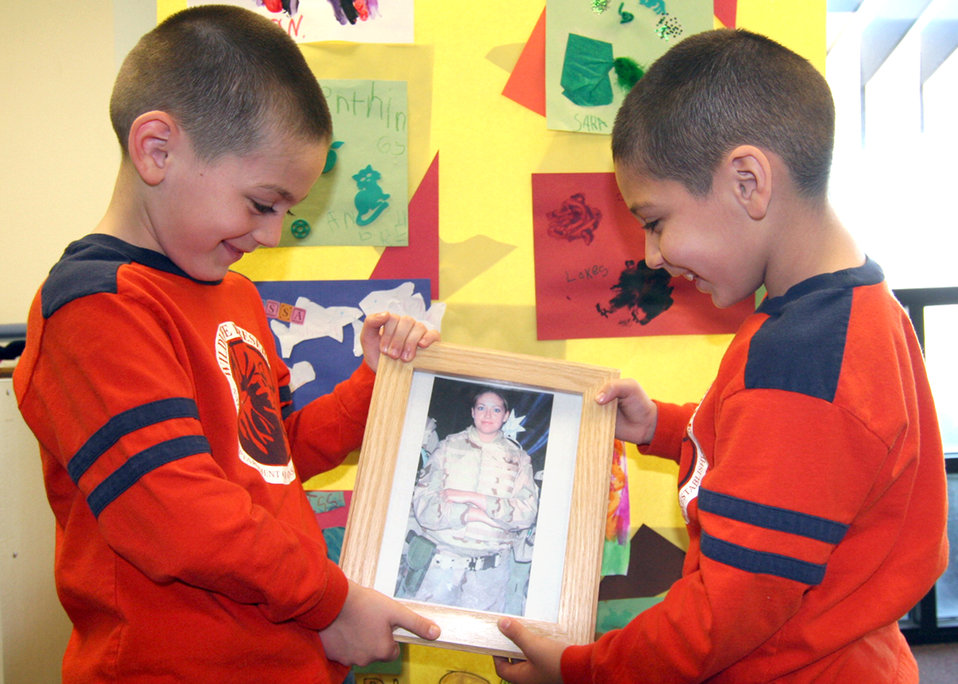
Standing tall with teary eyes

Damon and Kaden Koskovich, 6-year-old twins, hold a picture of their mother, Staff Sgt. Melissa Koskovich, at the child development center at Mountain Home Air Force Base, Idaho, on Tuesday, April 25, 2006. Sergeant Koskovich is currently deployed from Mountain Home to the U.S. Central Command area of operations in Southwest Asia.